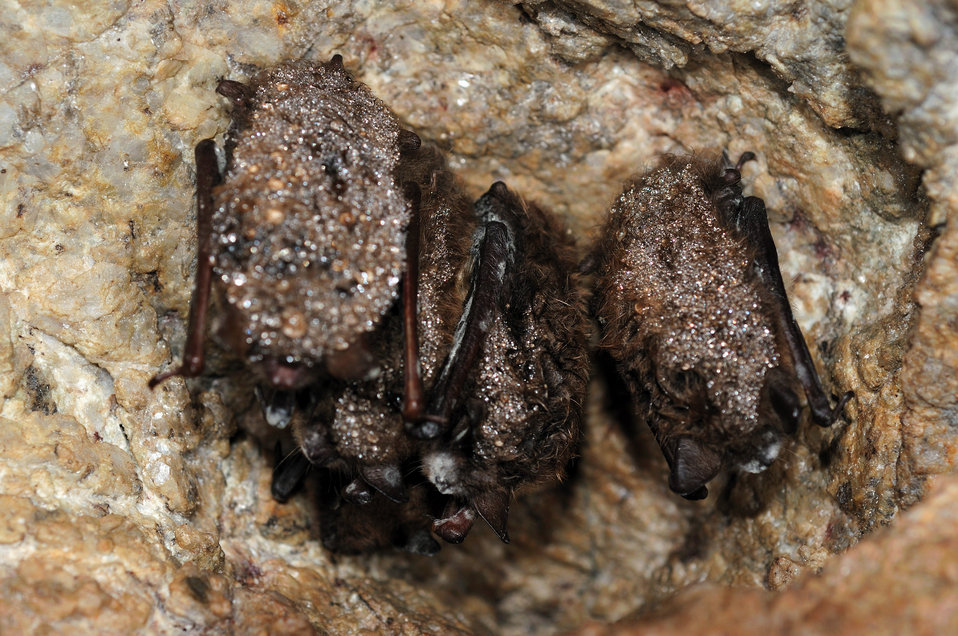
cluster little brown bats with white-nose syndrome